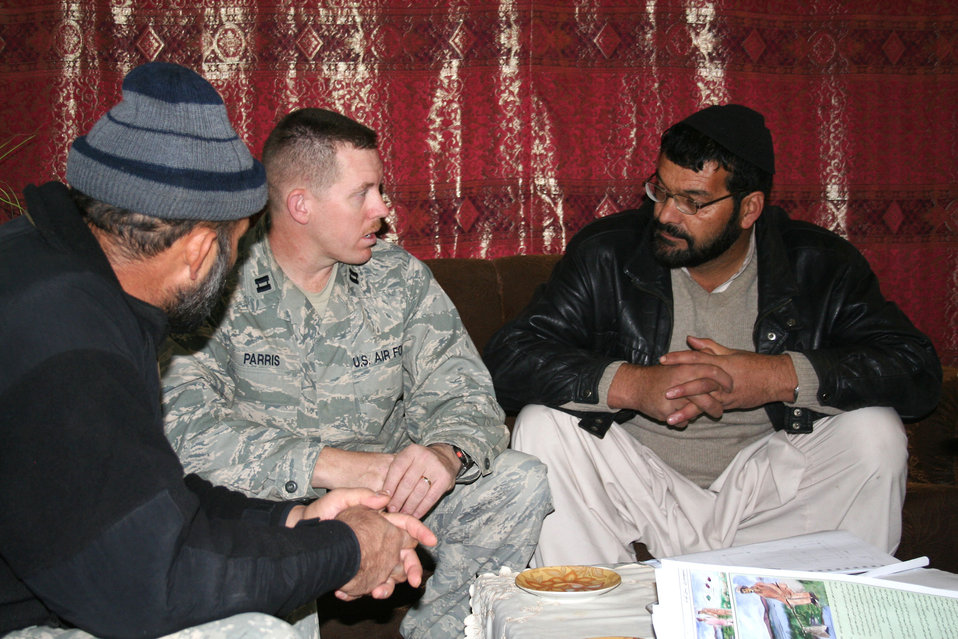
Physician assistant makes difference in Afghan lives

Capt. James Parris meets with Dr. Nadir Noori (right), Paktya's director of public health, recently to discuss numerous health projects. Captain Parris is the Provincial Reconstruction Team Paktya's director of medical plans.